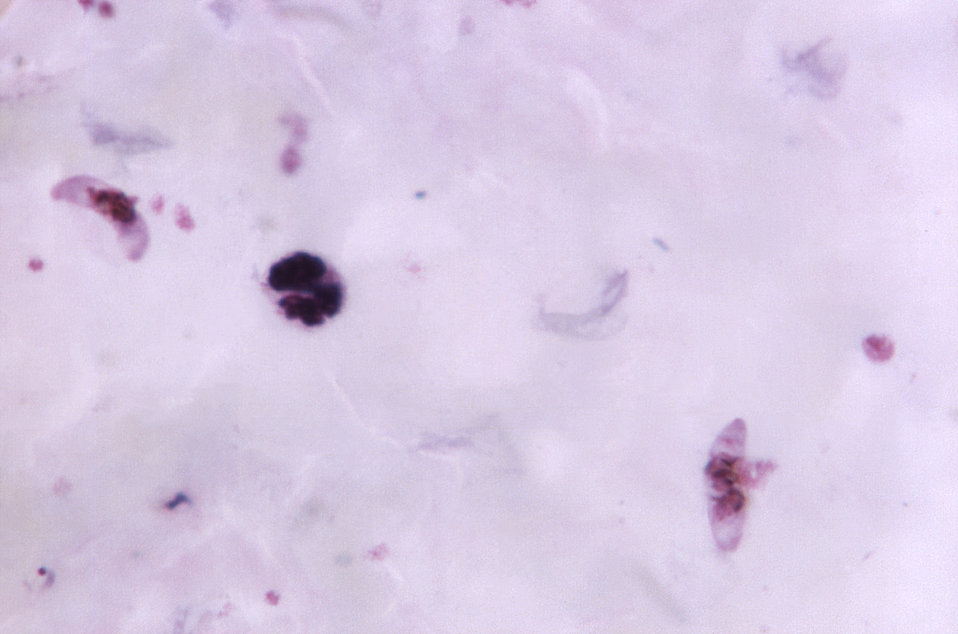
This thick film blood smear micrograph depicts two pinkish-colored, crescent-shaped Plasmodium falciparum gametocytes.